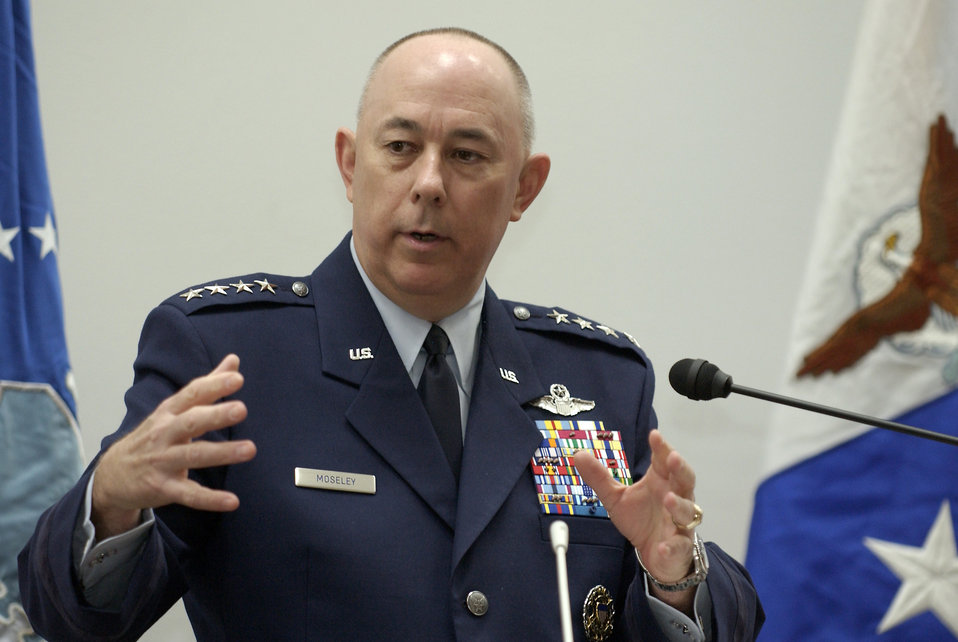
General Moseley speaks at defense strategy, transformation seminar

WASHINGTON -- Gen. T. Michael Moseley, Air Force vice chief of staff, talks to a group of congressional, industry and senior Air Force leaders during an Air Force Defense Strategy and Transformation Seminar here Feb. 9.